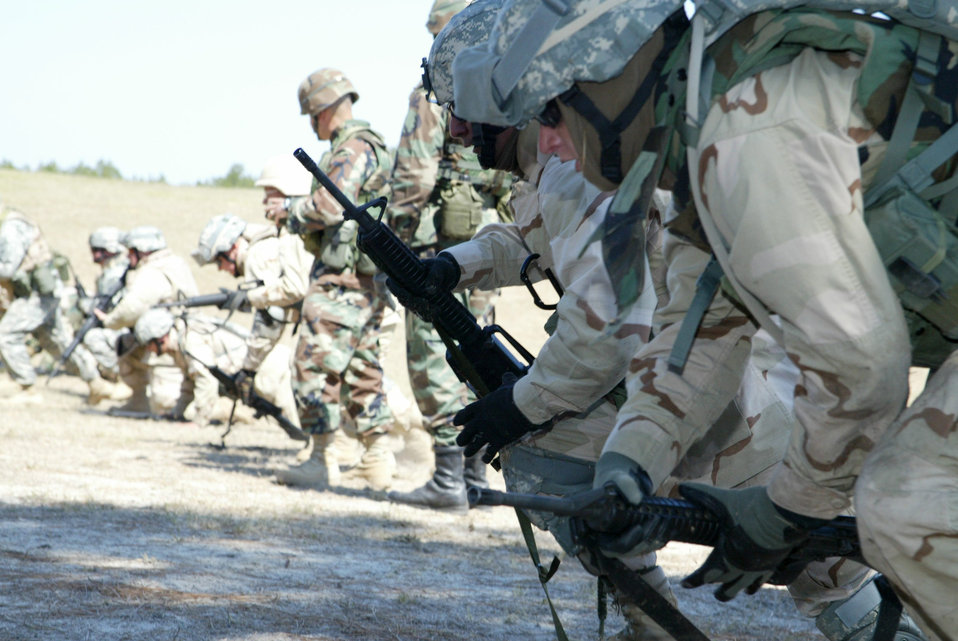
Provincial reconstruction team training

Airmen, Soldiers and Sailors train at Range 51 at Fort Bragg, N.C., for a year-long deployment to Afghanistan. The servicemembers are part of a new provincial reconstruction team whose aim is to help with the reconstruction, security and governing of the country.